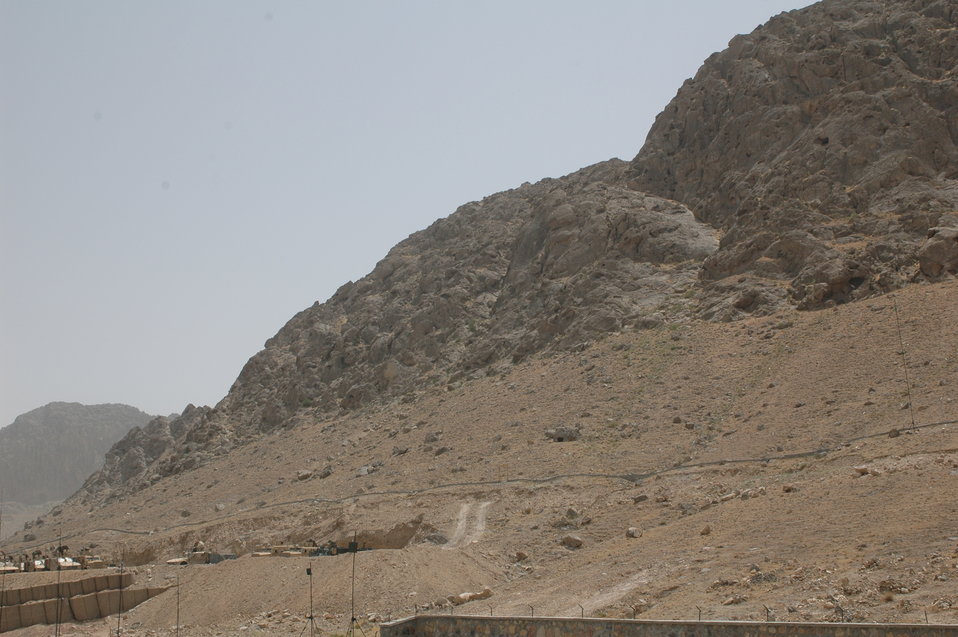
CODEL Berman